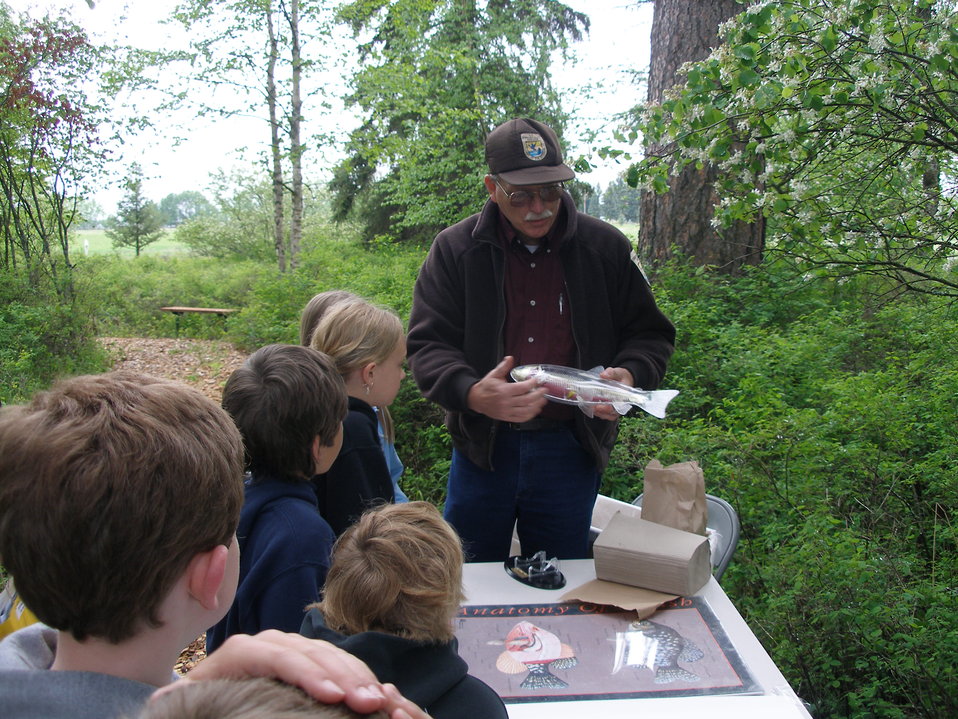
Creston National Fish Hatchery's Annual Fish Fun Fair for Third Graders

The Creston National Fish Hatchery, in association with the Flathead Community of Resource Educators (Flathead C.O.R.E.), holds an annual Fish Fun Fair to promote National Fishing and Boating Week.

Creston National Fish Hatchery invites 3rd graders from local schools to visit the hatchery and participate in learning stations, which may include fish anatomy, fish identification, fishing equipment and casting, hatchery tours, and other interesting exhibits with an aquatic focus.